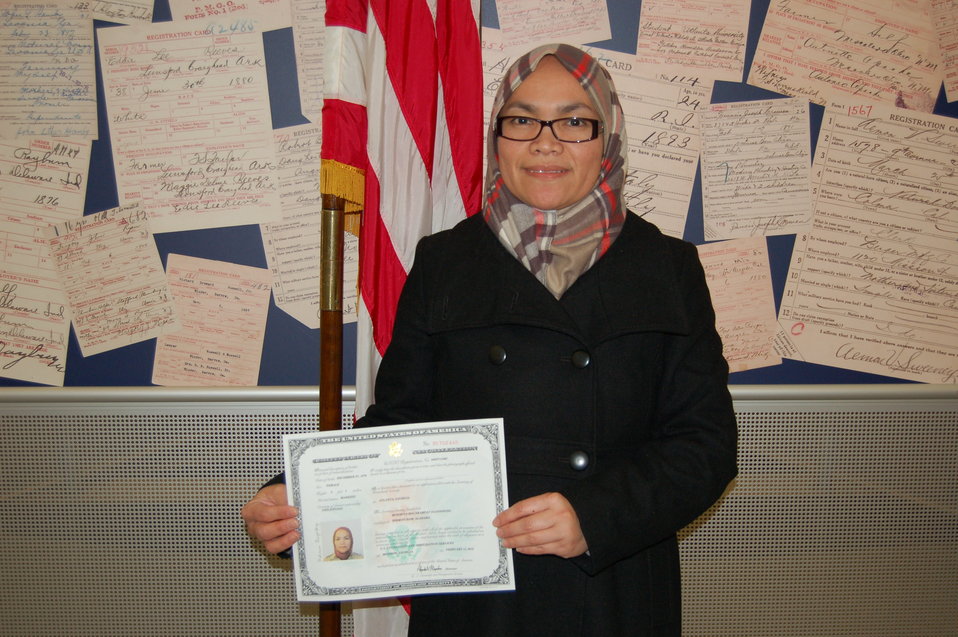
New Citizens